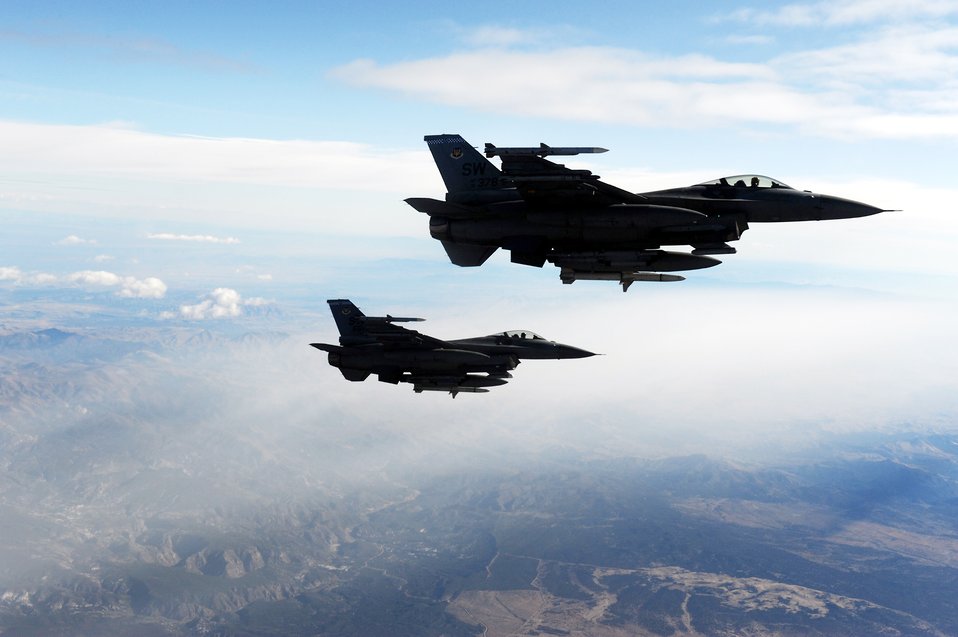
Air Force officials release F-16 accident report

Two F-16 Fighting Falcons, similar to the ones pictured above, collided during a training mission, Oct. 15, 2009, about 126 nautical miles southeast of Shaw Air Force Base, S.C.